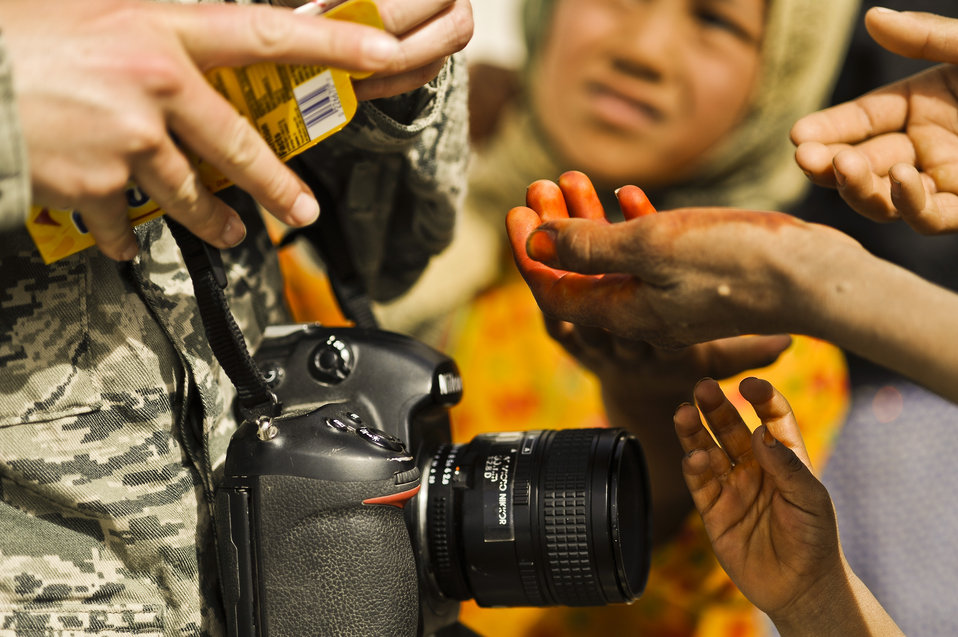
Behind the lens: Combat camera in Afghanistan

Staff Sgt. Christine Jones gives candy to Afghan children waiting to receive medical treatment March 16, 2010, at Lindenau Clinic in Main Operating Base Price, Helmand province, Afghanistan. Sergeant Jones is a photographer with 4th Combat Camera Squadron.